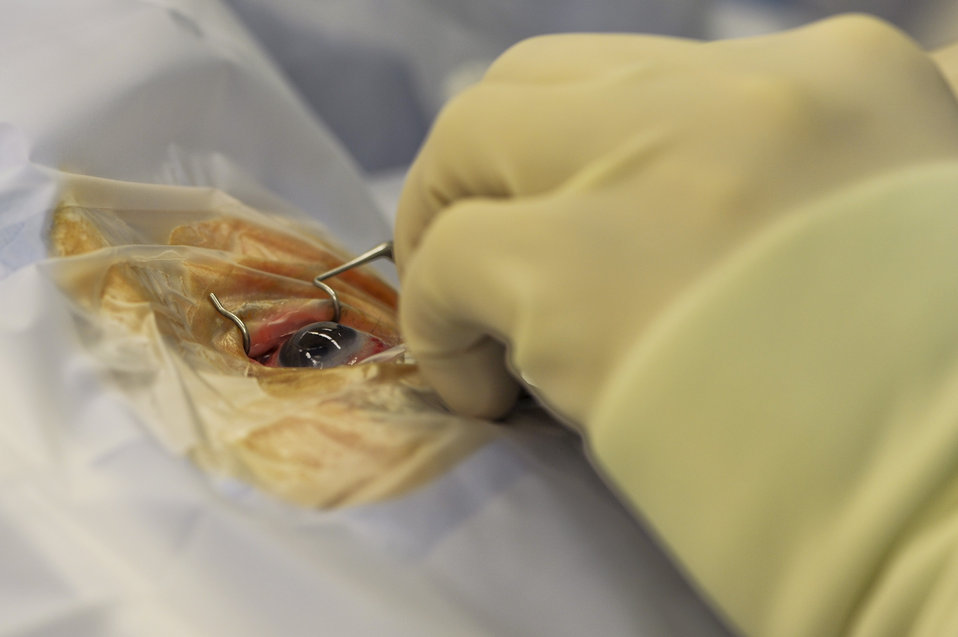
Ophthalmology surgeons employ cutting-edge technology

Maj. (Dr.) Vasudha Panday performs corneal transplantation on Gloria Bolick Dec. 22, 2009, at Wilford Hall Medical Center at Lackland Air Force Base, Texas. Doctor Panday is assigned to the 59th Medical Wing.